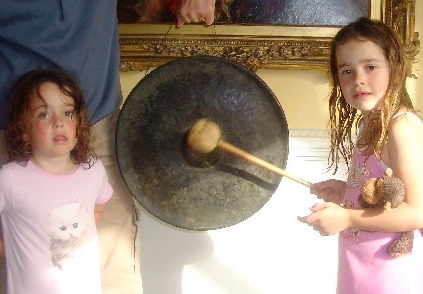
1850s Indian gong purchased by G Turnbull